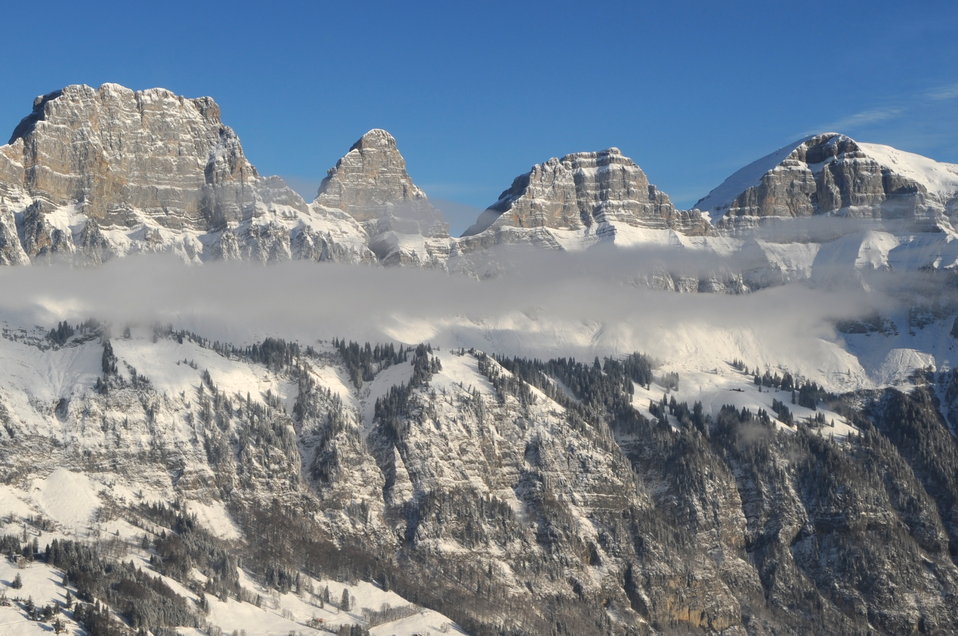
Swiss Alps As Seen From Secretary Kerry's Helicopter

Part of the range of Swiss Alps passed by U.S. Secretary of State John Kerry as he took a helicopter flight from Davos, Switzerland to Zurich on Jan. 25, 2014, after attending the World Economic Forum. [State Dept. Photo/Public Domain]